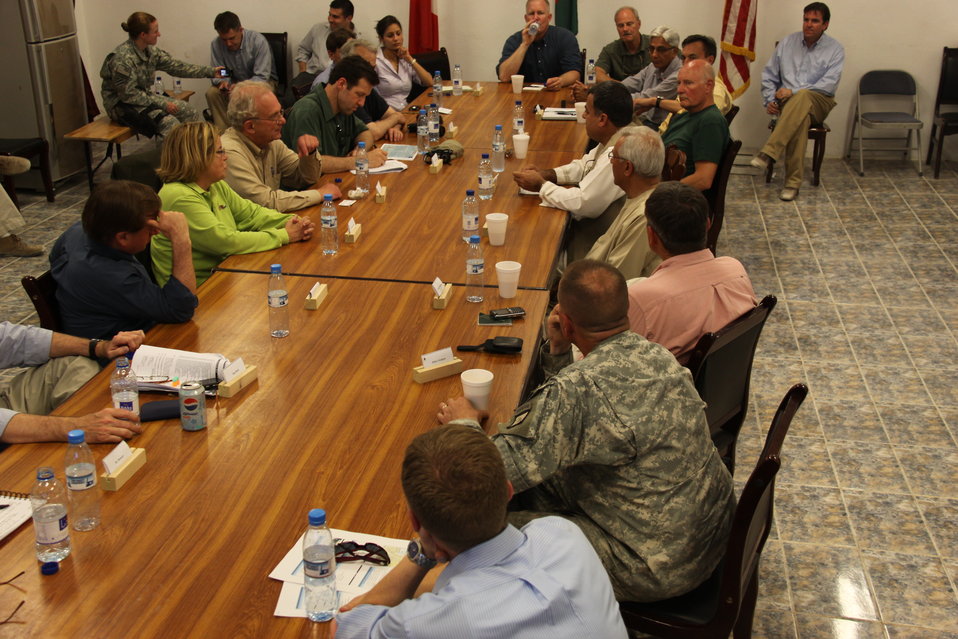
Meeting with Local Leaders in Kandahar